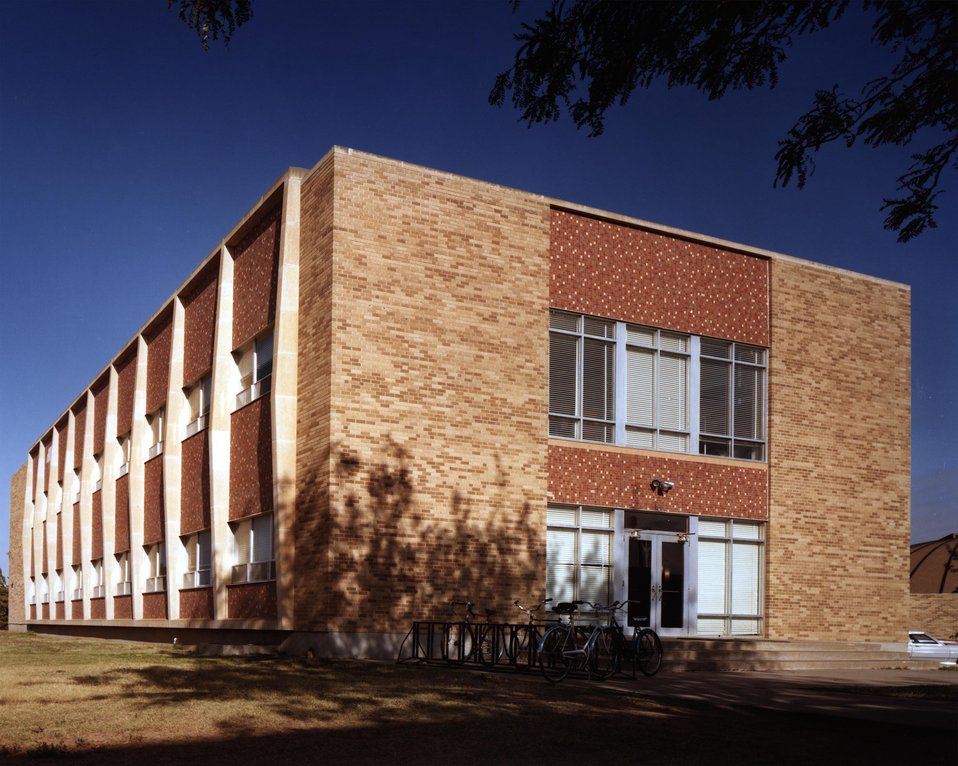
THE CHEMICAL ENGINEERING BUILDING AT TEXAS TECH.

THIS PROJECT ENTAILS CONDUCTING STUDIES IN AN EXISTING ONE- HALF TON PER-DAY TEST REACTOR, UTILIZING ANIMAL MANURES AND OTHER BIOMASS MATERIALS AS FEED STOCKS, TO DETERMINE THE INFLUENCE OF TEMPERATURE, RESIDENCE TIME, PRESSURE, AND FEED STOCK MATERIALS ON THE YIELD AND QUALITY OF THE PROCESS.THE DEPARTMENT OF CHEMICAL ENGINEERING AT TEXAS TECH USES AND MAINTAINS THE SGFM PILOT PLANT.